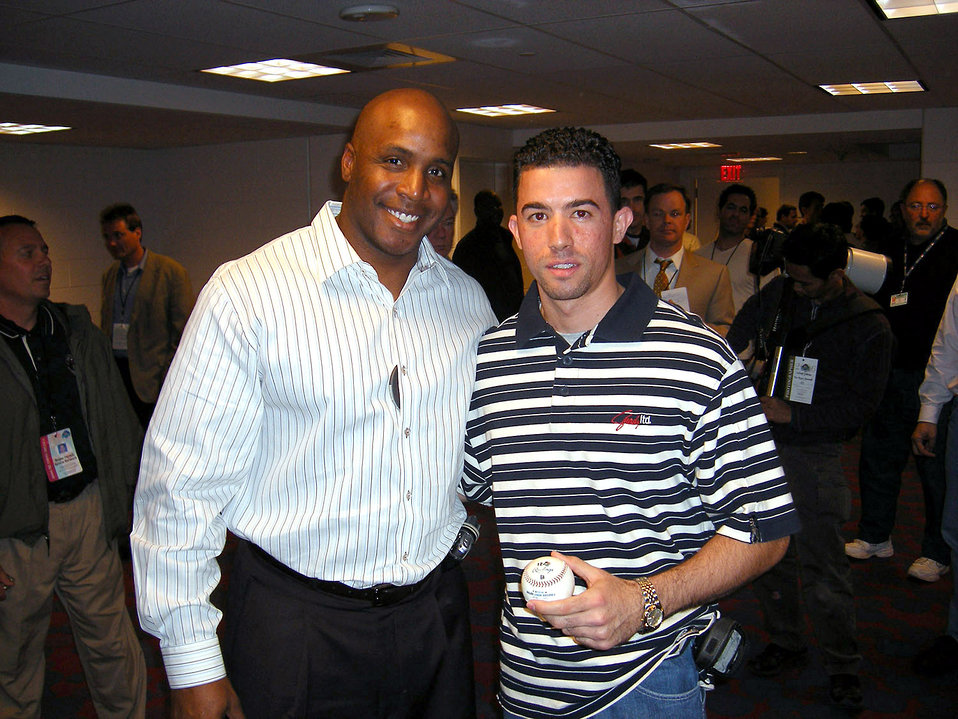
McGuire Airman makes lucky catch

San Francisco Giants outfielder Barry Bonds poses with Airman 1st Class Carlos Oliveras May 8 after he caught Bonds' home run ball #713. Airman Oliveras is assigned to the 305th Aerial Port Squadron at McGuire Air Force Base, N.J.